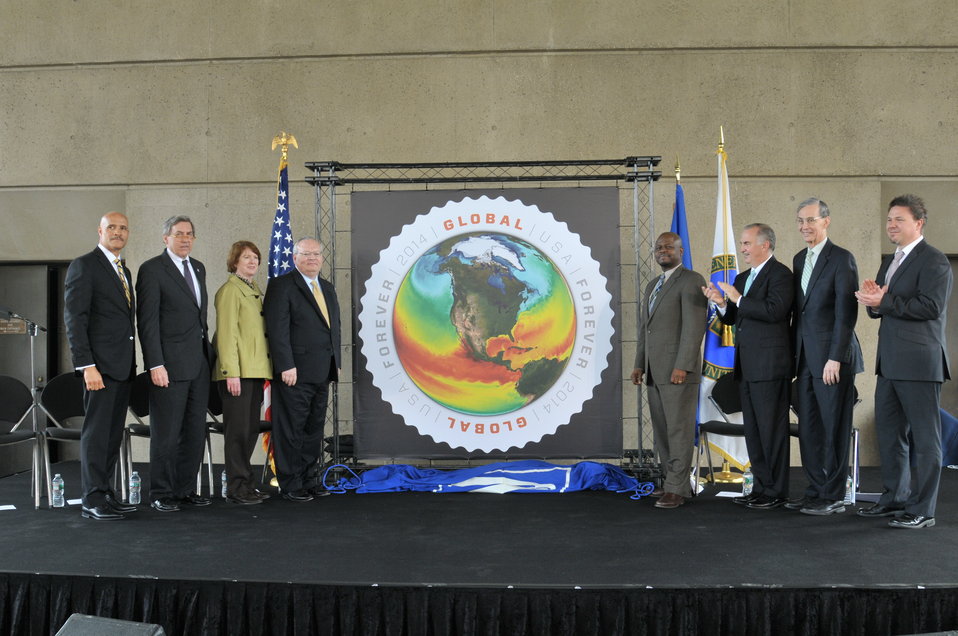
U.S Postal Services introduces a new Global: Sea Surface temperatures forever stamp at the Earth Day program at Department of Energy on April 22, 2014. ( DOE Deputy D.Poneman,T.Day, C.Williams, C.Anderson II, J.Colin Ph.D, Dr. K. Sullivan, K.Tobin Ph.D, W. Gicher Jr)